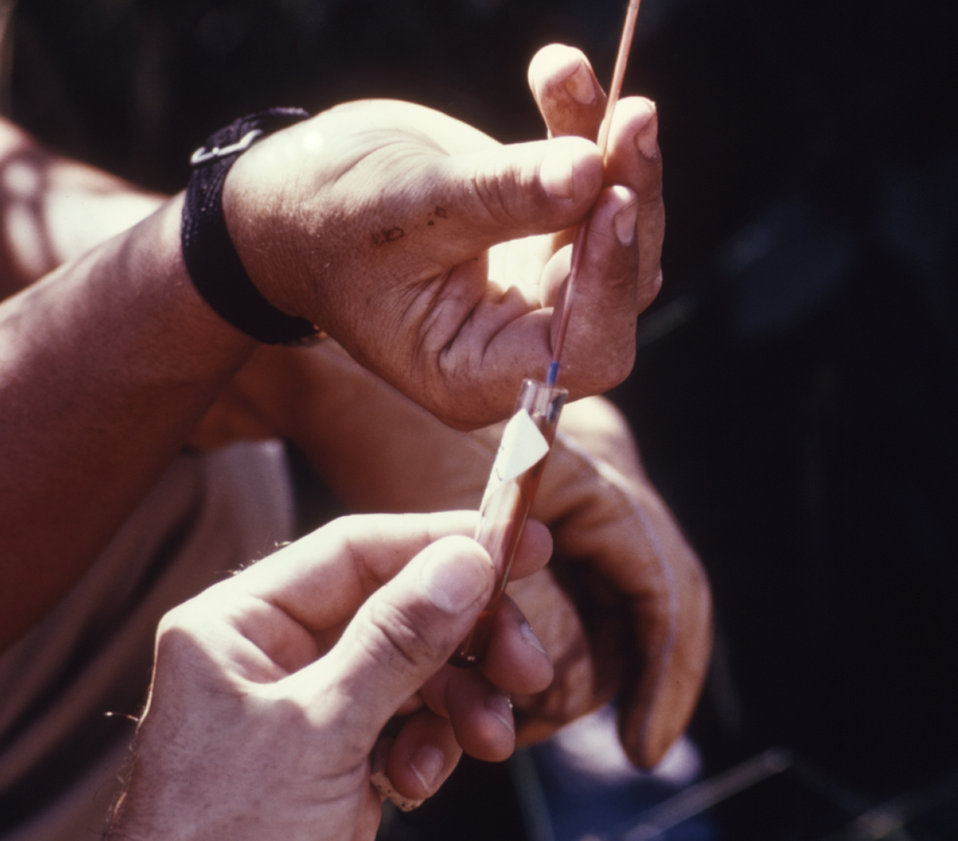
This clinician is discharging blood collected from a small vertebrate during a 1974 arbovirus study via a capillary tube.